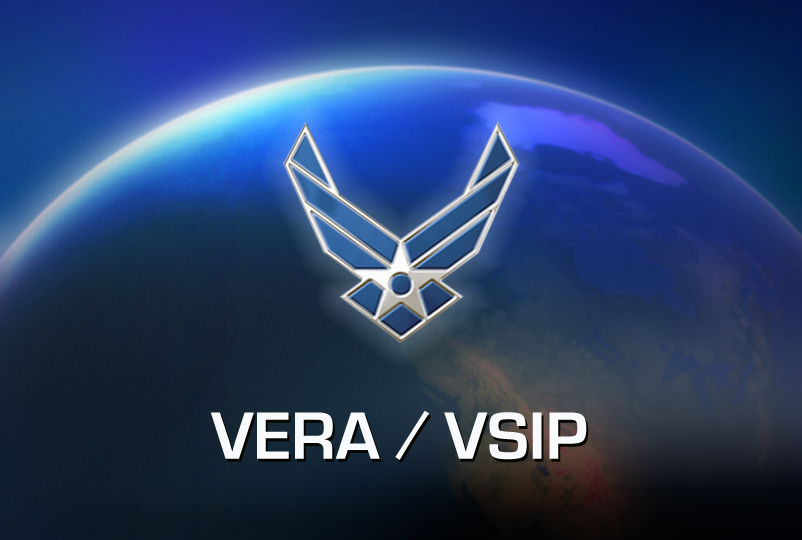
VERA / VSIP